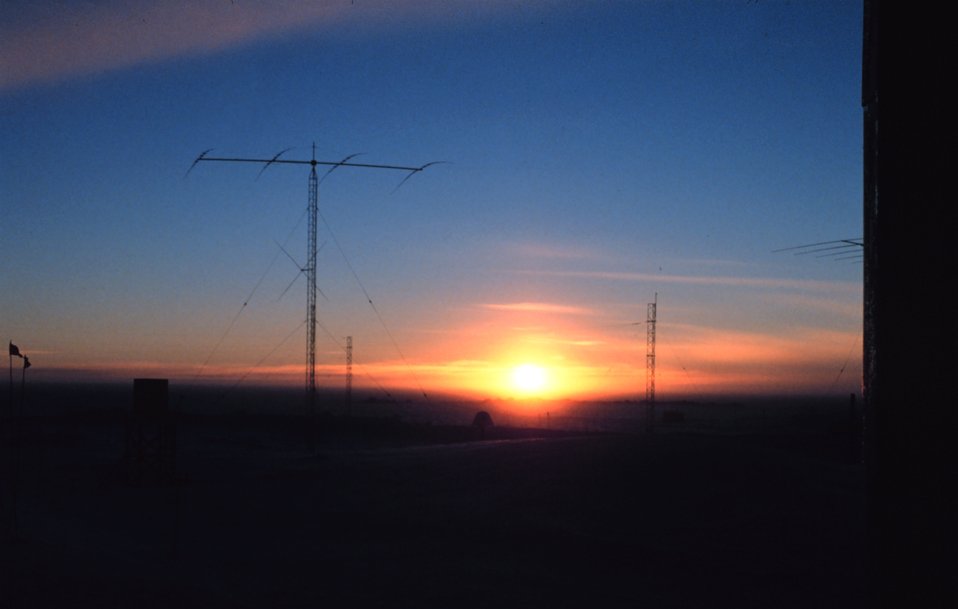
South Pole Station antenna farm illuminated by setting sun